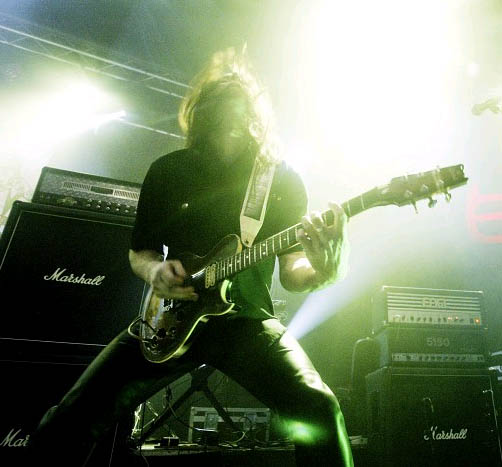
Henrik Flyman